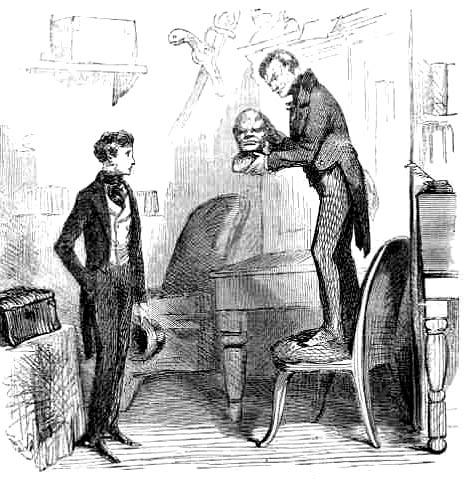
Wemmick shows a murderer's skull to Pip in Jagger's office, by John McLenan Français : Wemmick montre à Pip le crâne d'un meurtrier dans le bureau de Jaggers, par John McLenan